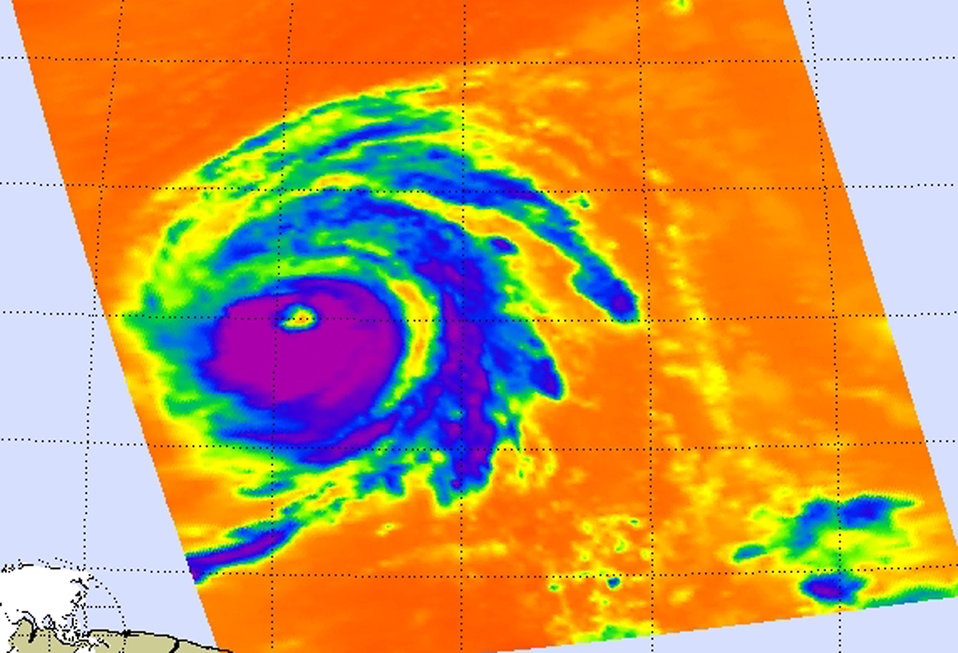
August 19, 2009 - Hurricane Season 2009: Hurricane Bill (Atlantic)